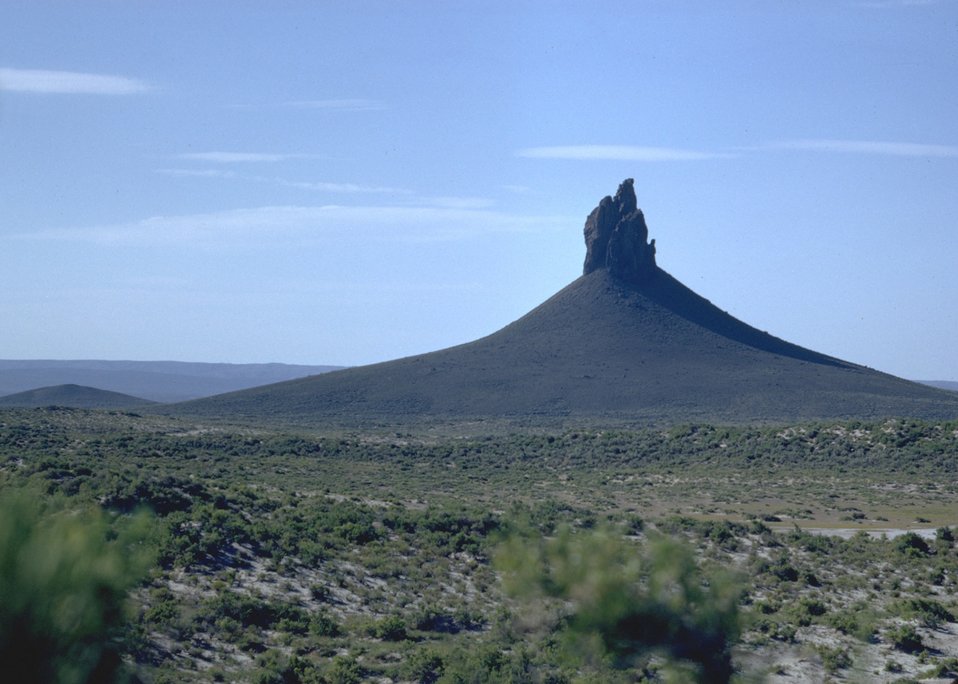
Boar's Tusk scenic view.